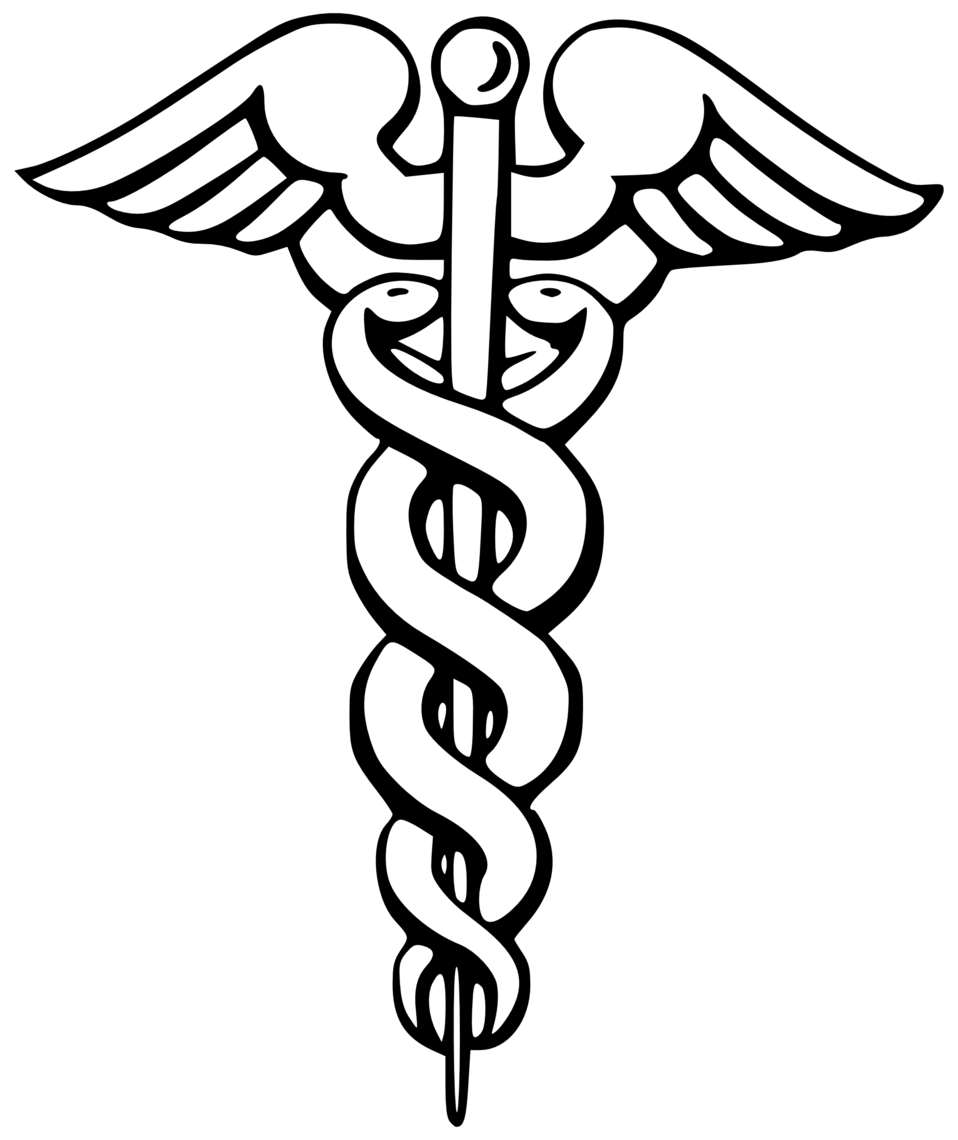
Caduceus symbol. Espa√±ol: Caduceo. Fran√ßais†: Une des repr√©sentations du caduc√©e d'Herm√®s, symbole de la m√©decine en Am√©rique (principalement). Le Caduc√©e d'Herm√®s repr√©sente √©galement les Sciences Economiques